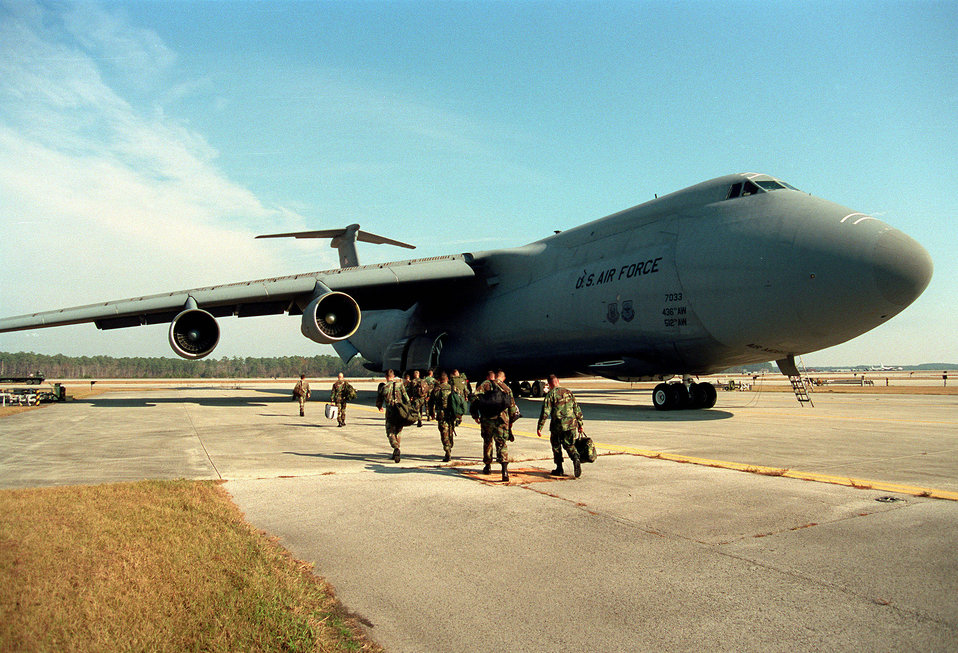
Panama bound

FILE PHOTO -- Marines of 2nd Light Armored Reconnaissance Battallion prepare to board a C-5 Galaxy at Marine Corps Air Station, Cherry Point, N. C. The C-5 will take them to Howard Air Force Base, Panama, to relieve a Marine security force detatchment at the Camp Hayes compound situated on the shoreline of the Canal, which serves to keep the surrounding area of the base within U.S. control and free of smugglers and intruders.